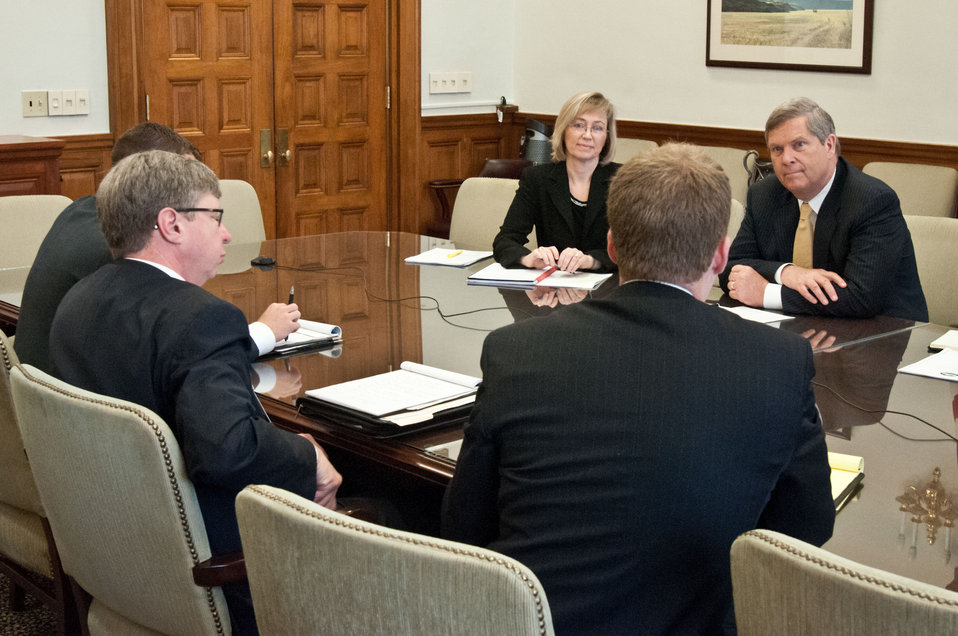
Director, External and Governmental Affairs, Jennifer Yezak (left) and Agriculture Secretary Tom Vilsack (right) listen to questions posed by invited members of the Rural Council Ben Husch, National Conference of State Legislatures, Brian Cavey, National Rural Electric Cooperative Association and Leif Oveson, National Telecommunications Cooperative Association during a conference call with other Rural Council stakeholders to discuss the economy of rural America at the United States Department of Agriculture in Washington, D.C., on Thursday, April 26, 2012.